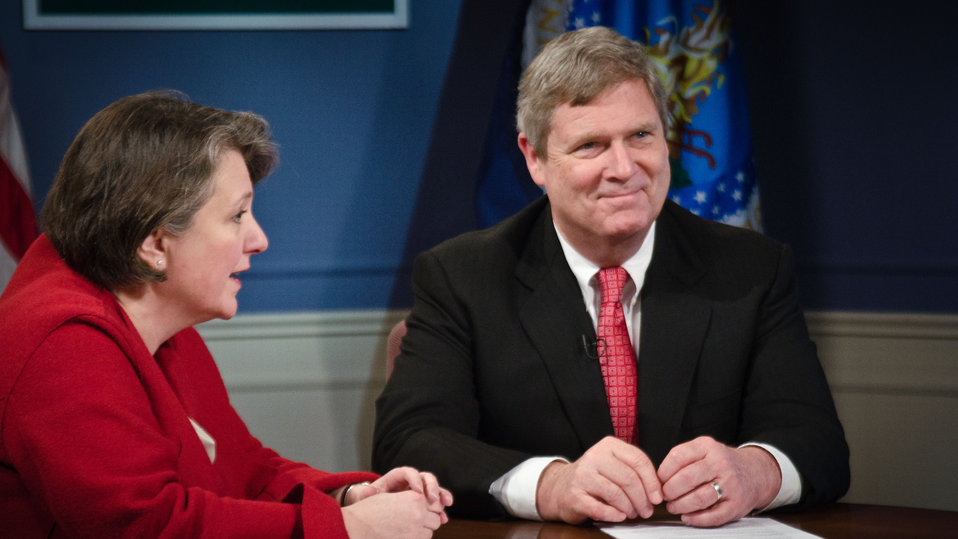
Agriculture Secretary Tom Vilsack and Agriculture Deputy Secretary Kathleen Merrigan unveiled the Know Your Farmer, Know Your Food (KYF) Compass, an interactive web-based document and map highlighting USDA support for local and regional food projects and successful producer, business and community case studies. While hosting a live webinar to highlight USDA's work over the past three years, the Secretaries emphasized how local and regional food systems across the country create additional economic opportunities for farmers, ranchers and food entrepreneurs, expand healthy food access and meet growing customer demand. At the U.S. Department of Agriculture in Washington, D.C. on Wednesday, February 29, 2012.